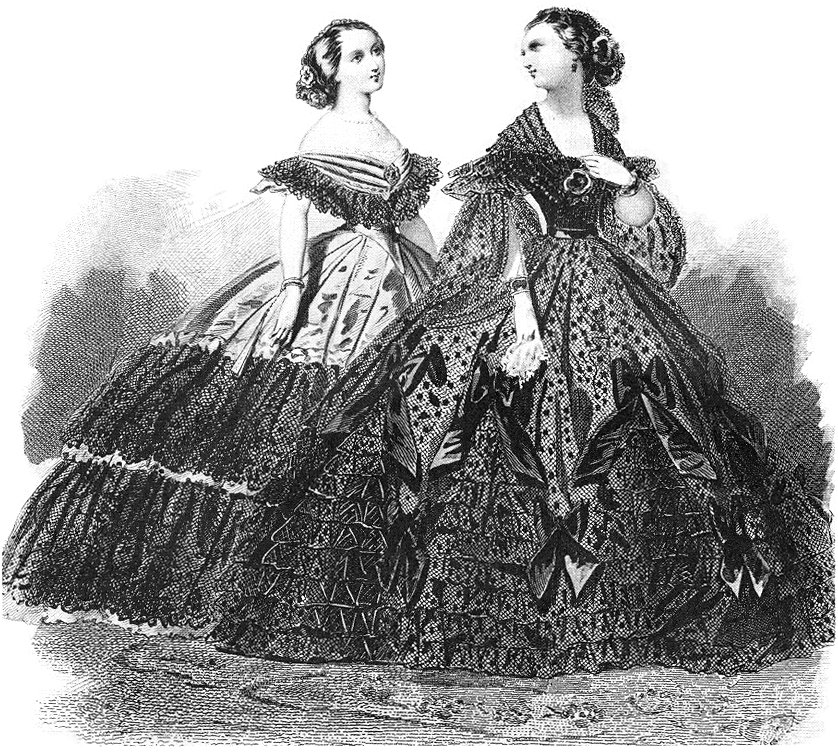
Ball-Gowns-Pauqet-early-1860s